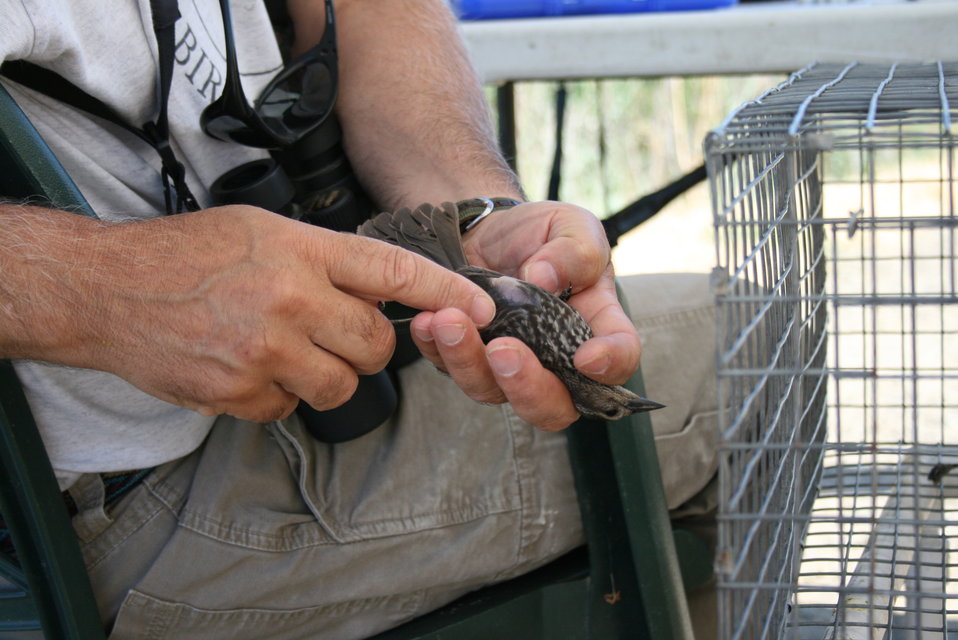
Female Tricolored Blackbird (Agelaius tricolor) with brood patch. Changes in hormone levels cause down feathers on the bird's stomach to become very loose. The tissue in the stomach area swells and the blood vessels of the skin expand. These changes make the bird's brood patch almost as hot as the body's interior and good for incubating eggs.